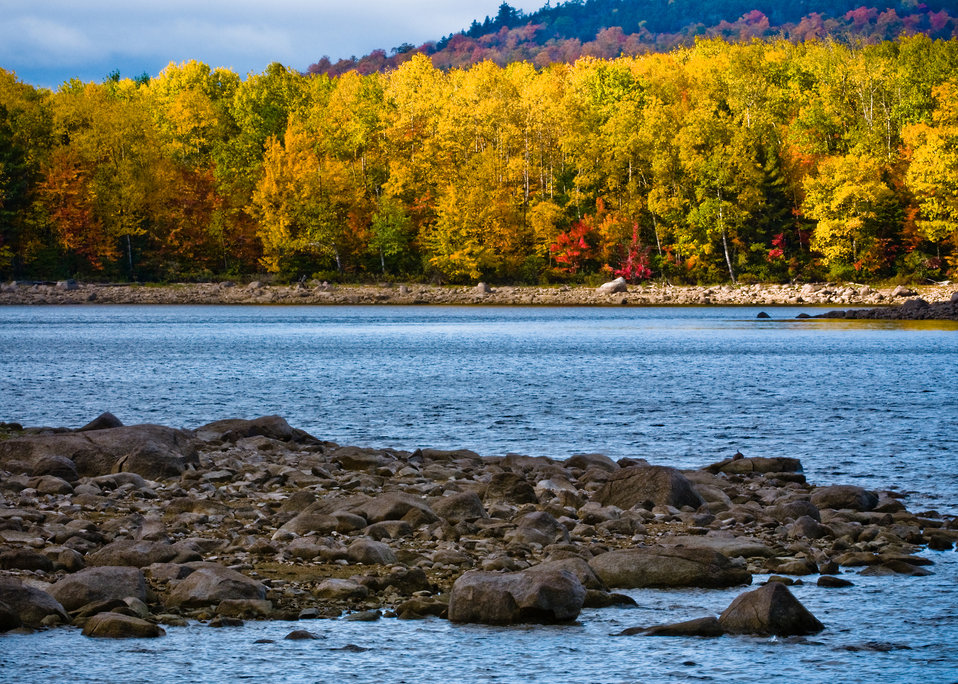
Peaceful solace is offered along a lakeshore in the White Mountain National Forest in Maine. It would be difficult for a traveler not to find a site worthy of a great painting or a great photograph.